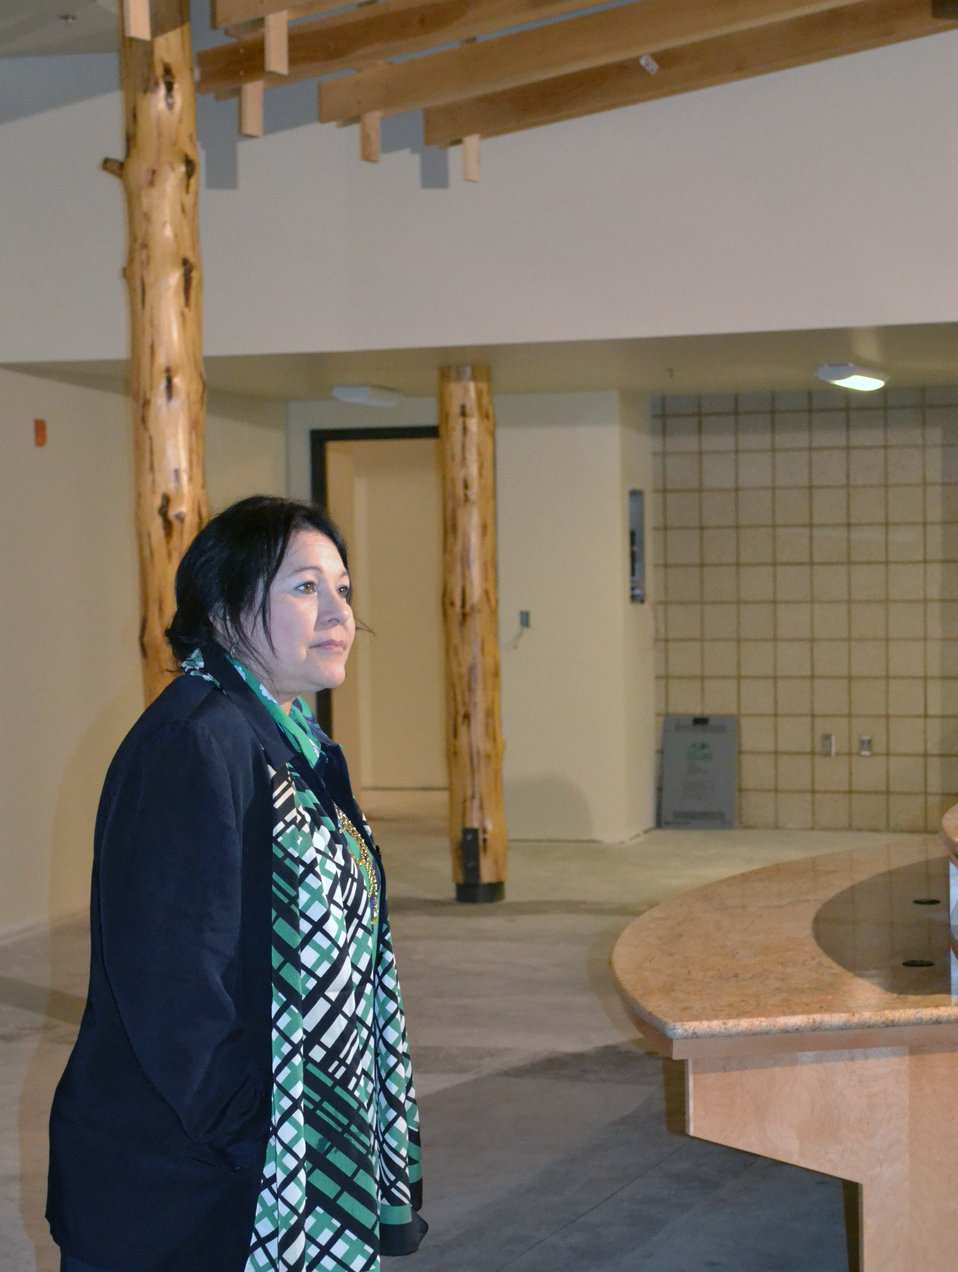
U.S. Department of Agriculture (USDA) Rural Development (RD) Rural Housing Service (RUS) Administrator Tammye Travino visits South Dakota to co-chair a StrikeForce meeting in Sissetion, SD. Travino attended a Housing Fair and visited homes and facilities financed by USDA's RD as part of National Homeownership Month on Monday, Jun. 3, 2013.